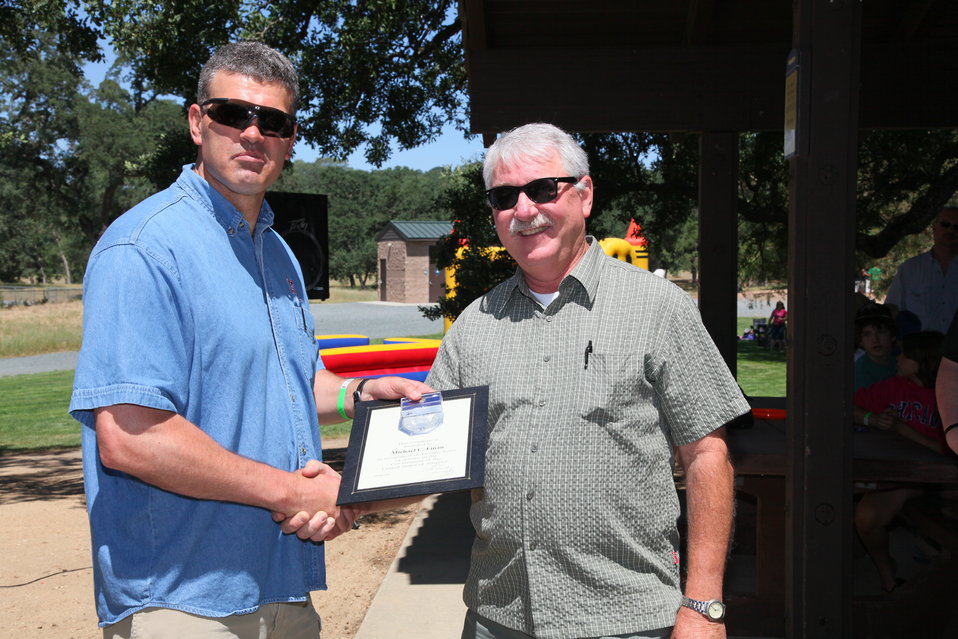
2011 Annual Picnic